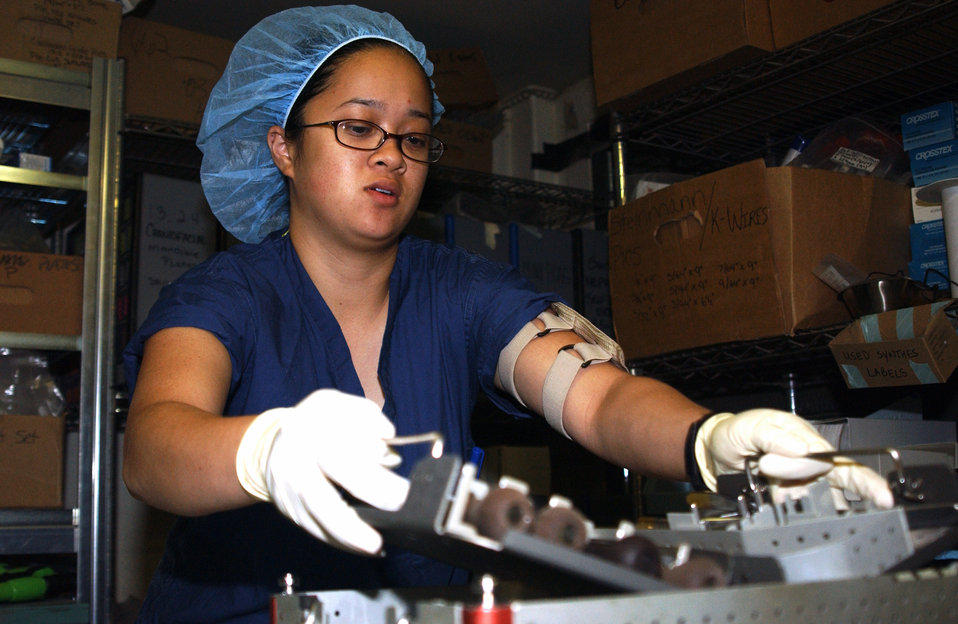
OR technicians help save lives in Iraq

Staff Sgt. Myla Vizcarra prepares instruments for the operating room Oct. 14 at Balad Air Base, Iraq. Sergeant Vizcarra is an operating room technician assigned to the 332nd Expeditionary Medical Group.